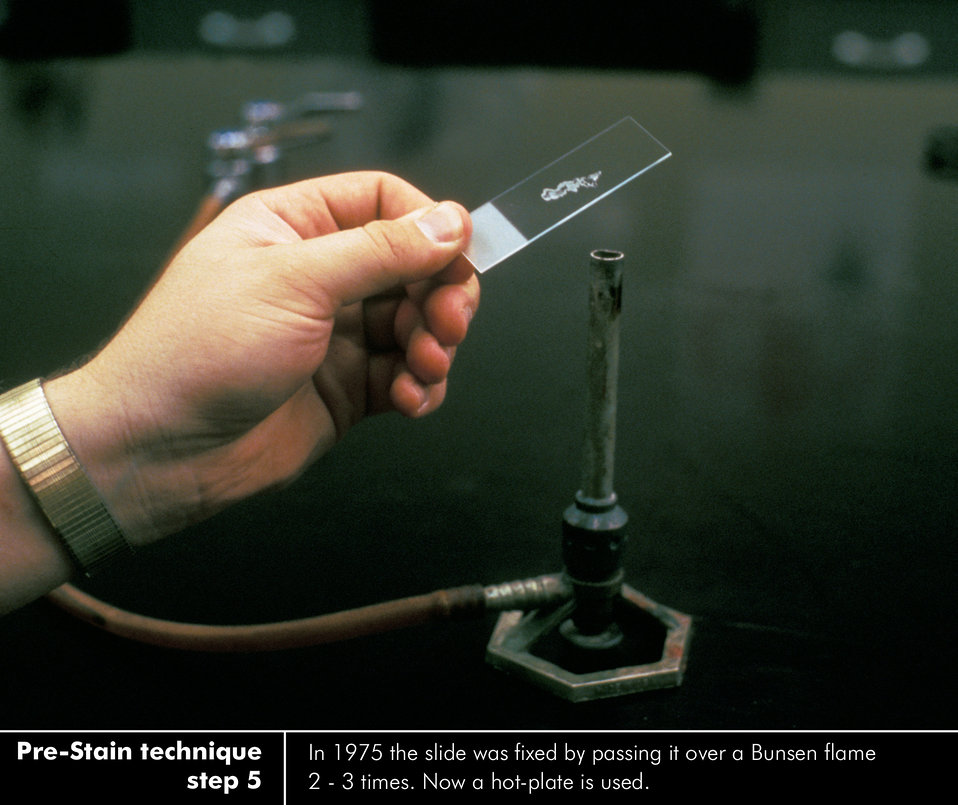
Pre-stain technique - Step 5 of 5. See PHIL ID#'s: 3431, 3572, 3432, 3565, 3428 for the complete set.